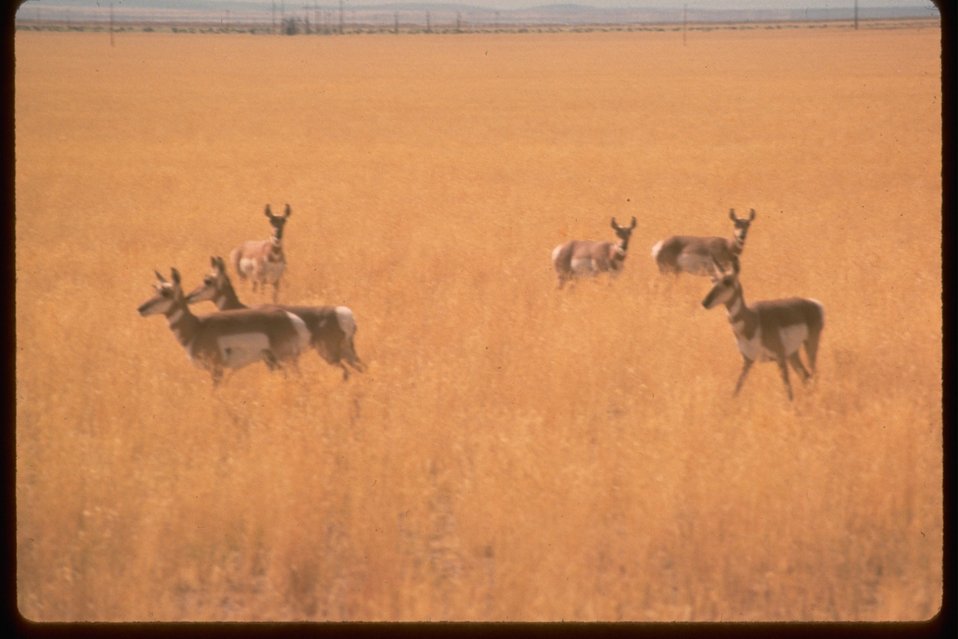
Prong horn Antelope in crested wheatgrass seeding of Catlow Valley.